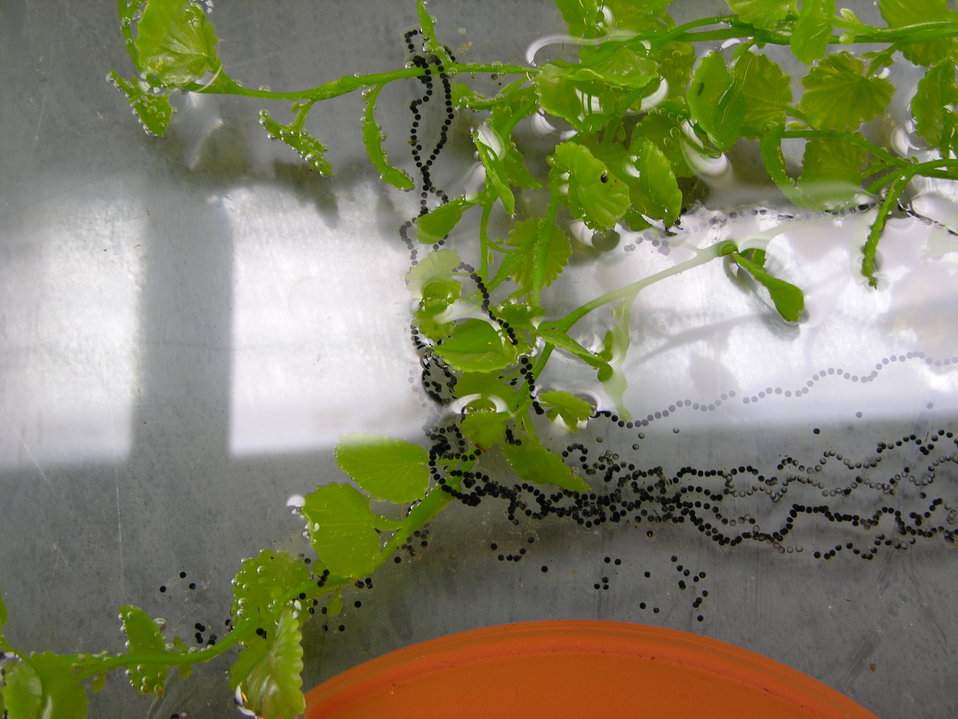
Wyoming Tadpoles

In 1997, Saratoga National Fish Hatchery adopted a unique role in becoming the first hatchery in the National Fish Hatchery System to become involved in rearing endangered amphibians.